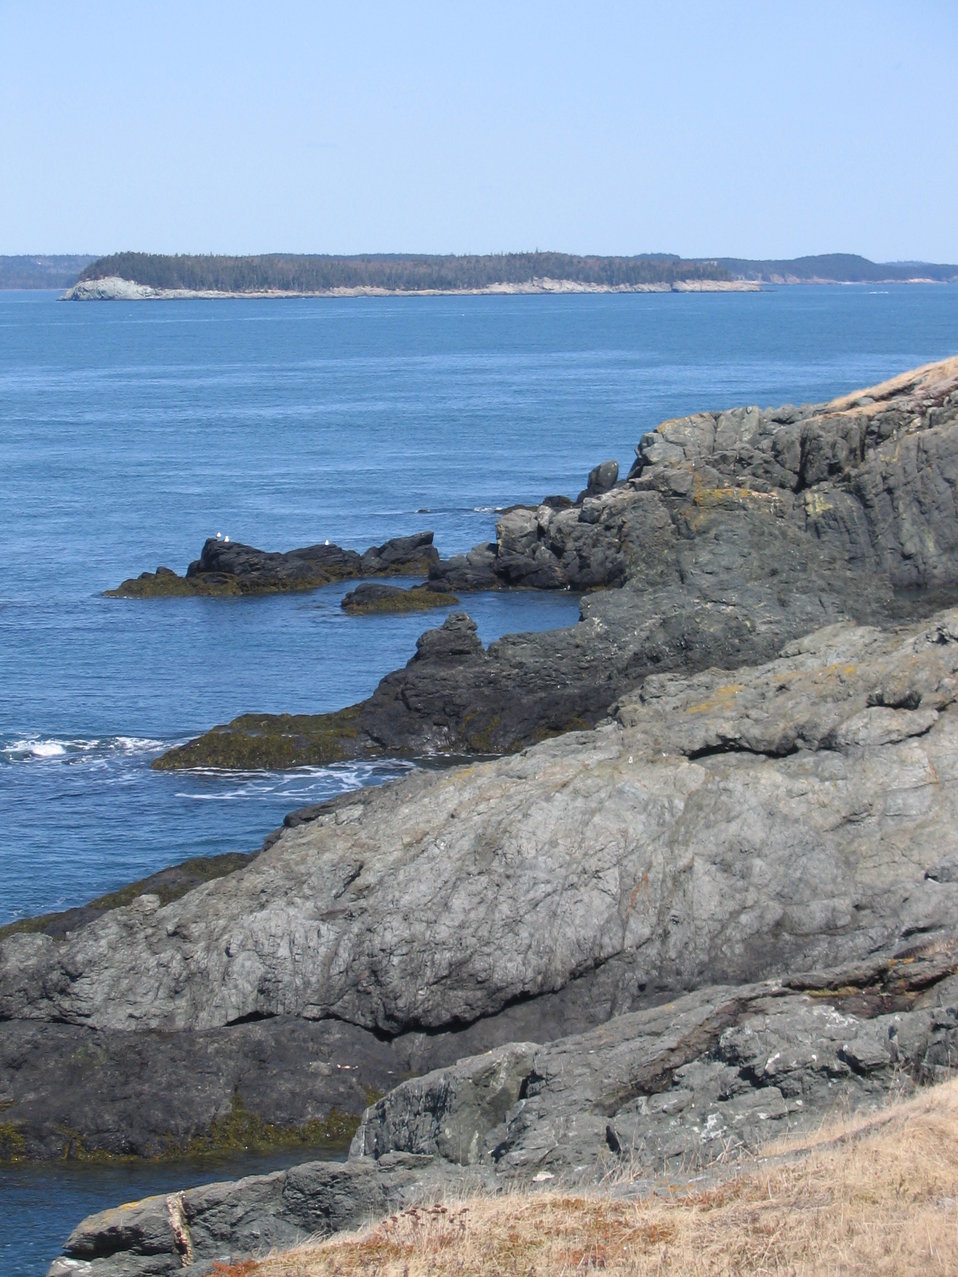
Maine Coastal Islands NWR

Maine Coastal Islands National Wildlife Refuge